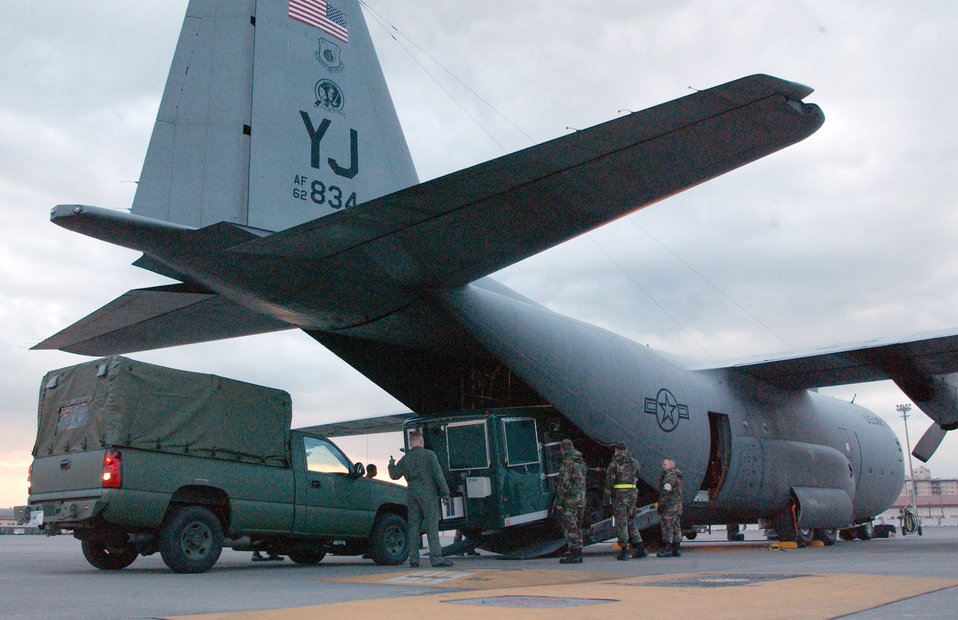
PACAF Airmen coordinate Air Force relief efforts

YOKOTA AIR BASE, Japan -- Airmen from here load a C-130 Hercules with mission-support materials Dec. 28. The Airmen are deploying to Thailand supporting relief efforts after an earthquake and tsunamis devastated coastal regions of the Indian Ocean on Dec. 26. They will help establish a forward-operating base and assess the needs for additional relief efforts in the region.